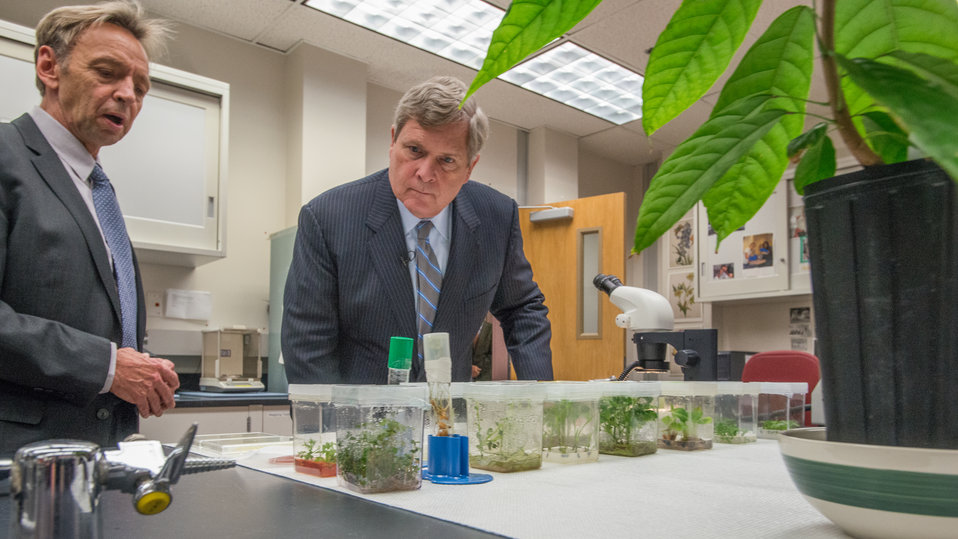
Agriculture Secretary Tom Vilsack looks at cube vessels with plant tissue cultures as U.S. Department of Agriculture (USDA) Agriculture Research Service (ARS) Geneticist Research Leader Dr. David Dierig provides details about the process to the Secretary at USDA‘s ARS National Center for Genetic Resources Preservation (NCGRP) in Ft. Collins, CO on Wednesday, Nov. 6, 2013. NCGRP is the largest agricultural gene bank facility in the U.S. The NCGRP staff conducts groundbreaking research to develop more efficient and effective means for preserving plant and animal germplasm, and for better understanding the genetic structure of these invaluable materials. The research findings, preservation techniques, and specialized technology developed by the NCGRP have been adopted by gene banks around the world: many international scientists travel to the NCGRP for research and training.